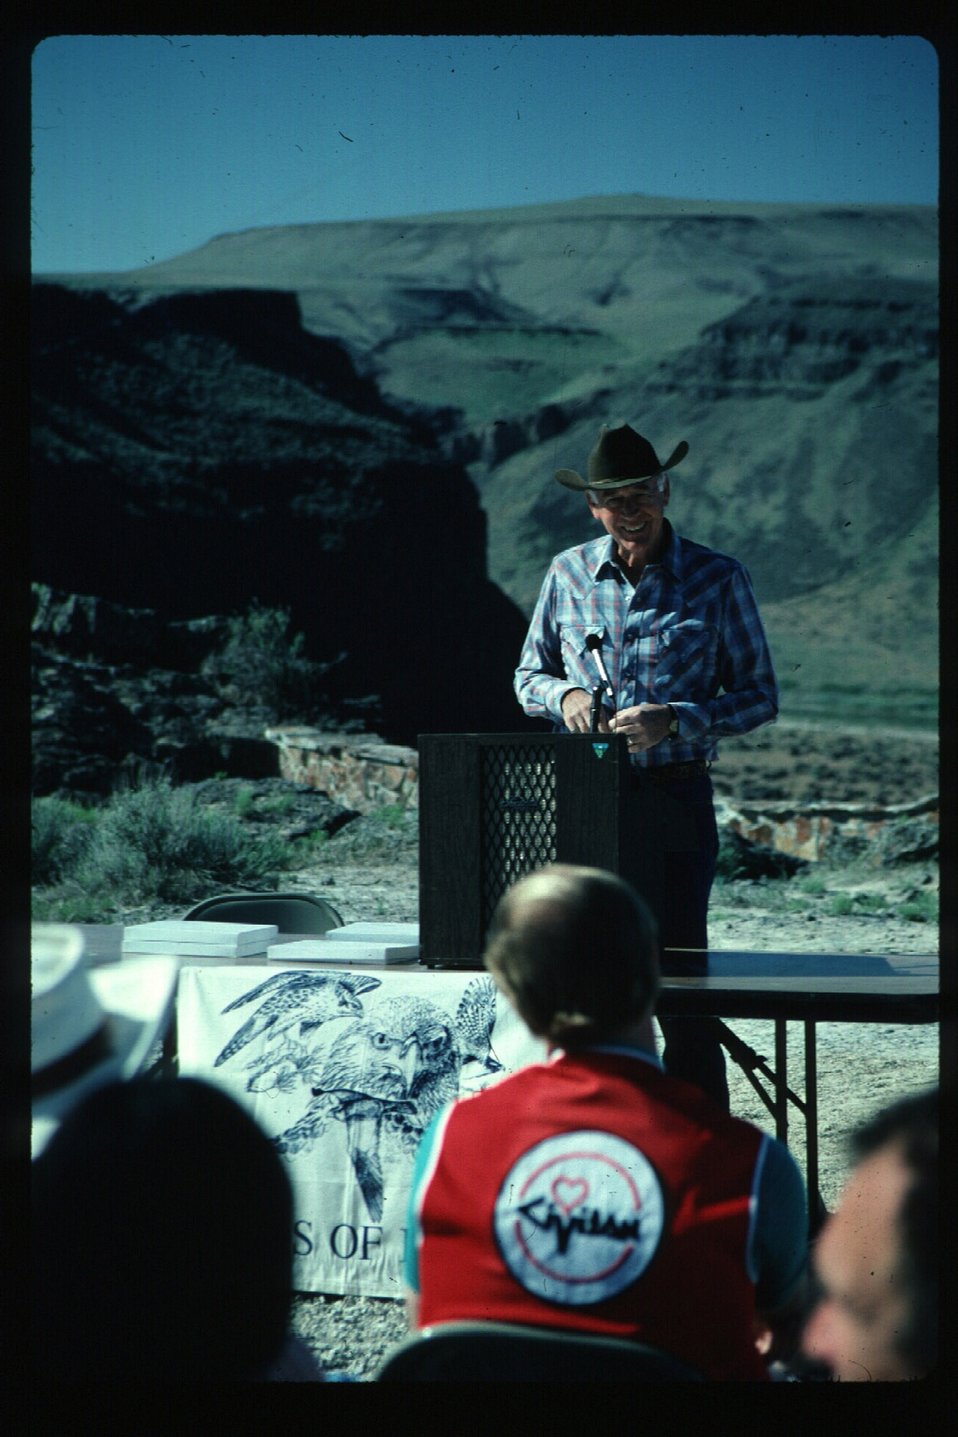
Governor Andrus at Dedication Point Ceremony Birds of Prey National Conservation Area BOP NCA Owyhee Field Office LSRD Lower Snake River District